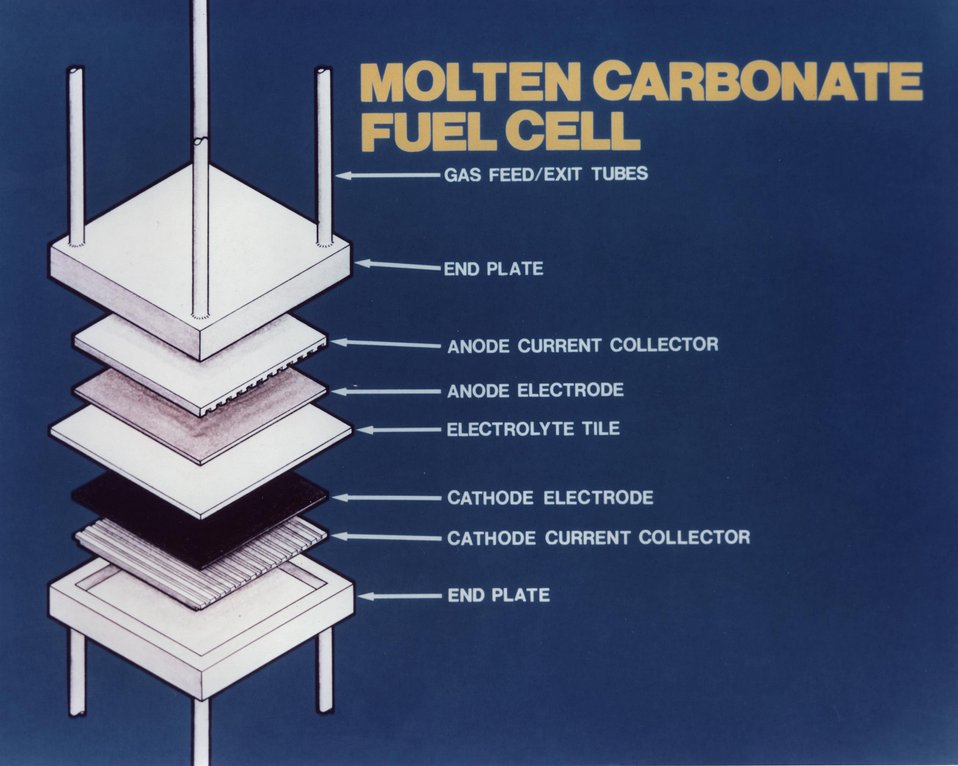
DIAGRAM OF MOLTEN CARBONATE FUEL CELL.

A NEWER METHOD OF COMMERCIALLY GENERATING ELECTRICITY IS BEING DEVELOPED BY GENERAL ELECTRIC. FUEL CELLS, BATTERY-LIKE GENERATORS, PRODUCE ELECTRICITY BY AN ELECTROCHEMICAL RE- ACTION. UNLIKE THE BATTERY, THE FUEL CELL HAS A CONSTANT SOURCE OF FUEL. IN THIS PROGRAM, G.E. IS PLANNING TO USE GASIFIED COAL TO POWER THE CELLS. THIS HYDROGEN-RICH FUEL IS FED INTO ONE SIDE OF THE CELL WHILE OXYGEN IS FED INTO THE OTHER. THIS CREATES A NEGATIVE CHARGE AT THE HYDROGEN (ANODE) SIDE AND A POSITIVE CHARGE AT THE OXYGEN (CATHODE) SIDE. THE ATTRACTION OF THESE CHARGES CAUSES THE ELECTRONS TO FLOW THROUGH THE MOLTEN CARBONATE ELECTROLYTE. THIS MOVEMENT OF THE ELECTRONS CREATES THE ELECTRICITY. BECAUSE THE MOLTEN CARBONATE FUEL CELL HAS A HIGH OPERATING TEMPERATURE, IT CREATES EXCESS HEAT WHICH CAN BE USED TO POWER OTHER ELECTRIC GENERATORS.